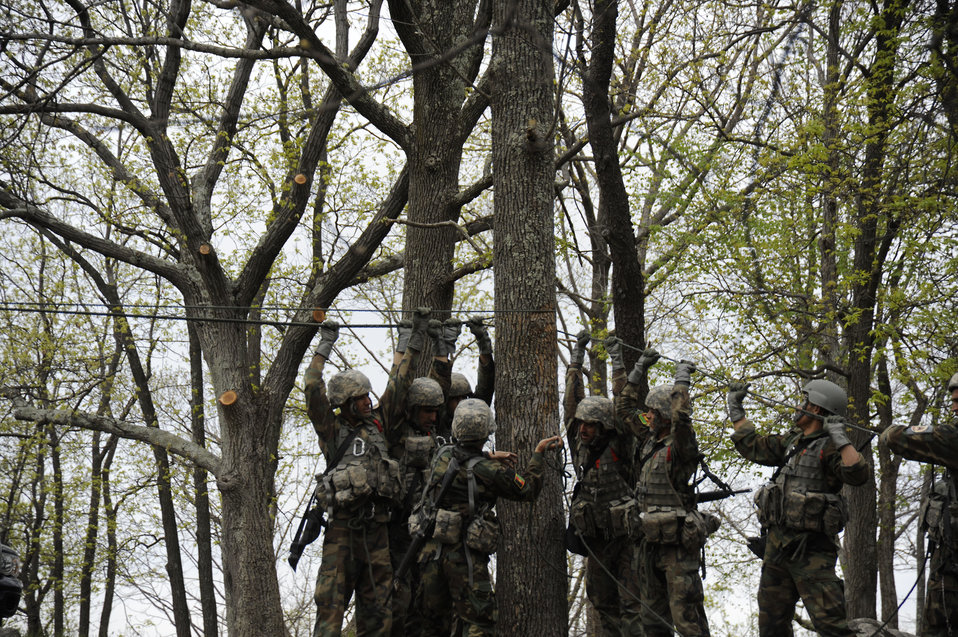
2012 Sandhurst Competition

Afghan cadets work together to construct a rope bridge during training April 18, 2012, for the 2012 Sandhurst Competition at the U.S. Military Academy in West Point, N.Y. Cadets from military academies and colleges from around the world were invited to participate.